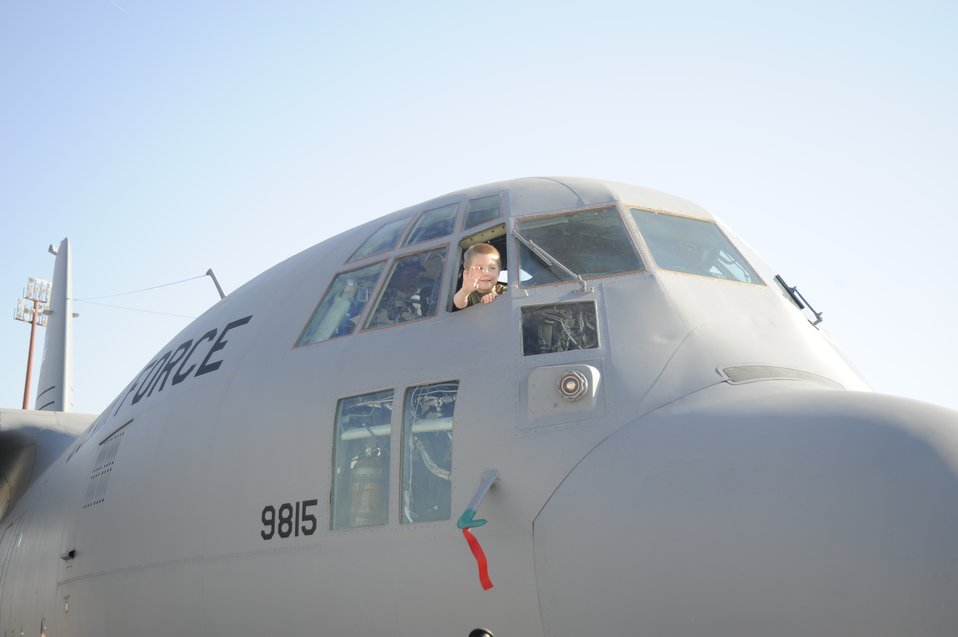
Langley showcases airpower to conclude Hampton Roads Air Force Week

Jacob Jackson, a 5-year-old, waves to people from a C-130 Hercules during the first day of Airpower over Hampton Roads, a three-day airshow culmination of Air Force Week April 24 at Langley Air Force Base, Va.